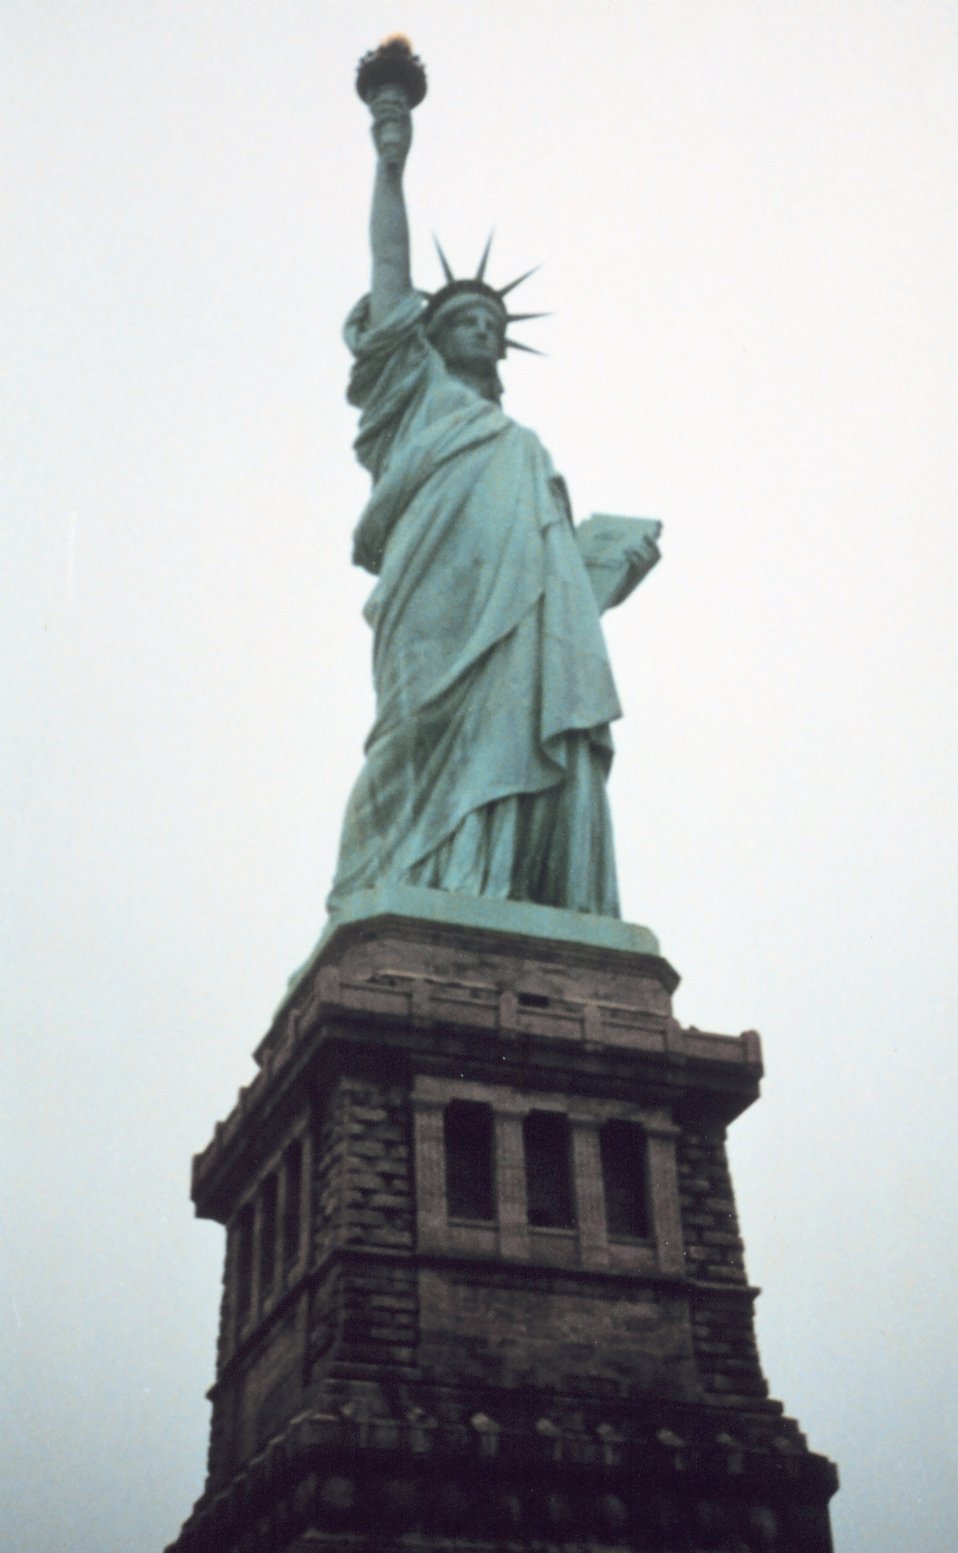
The Statue of Liberty, New York Harbor